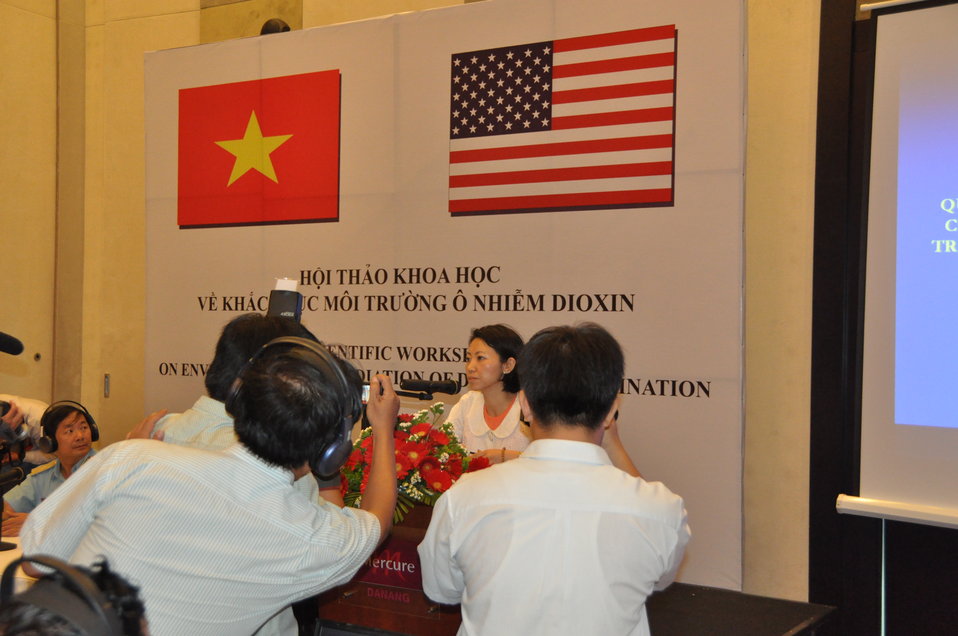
Scientific Workshop on Environmental Remediation of Dioxin Contamination at Danang Airport

August 8, 2012